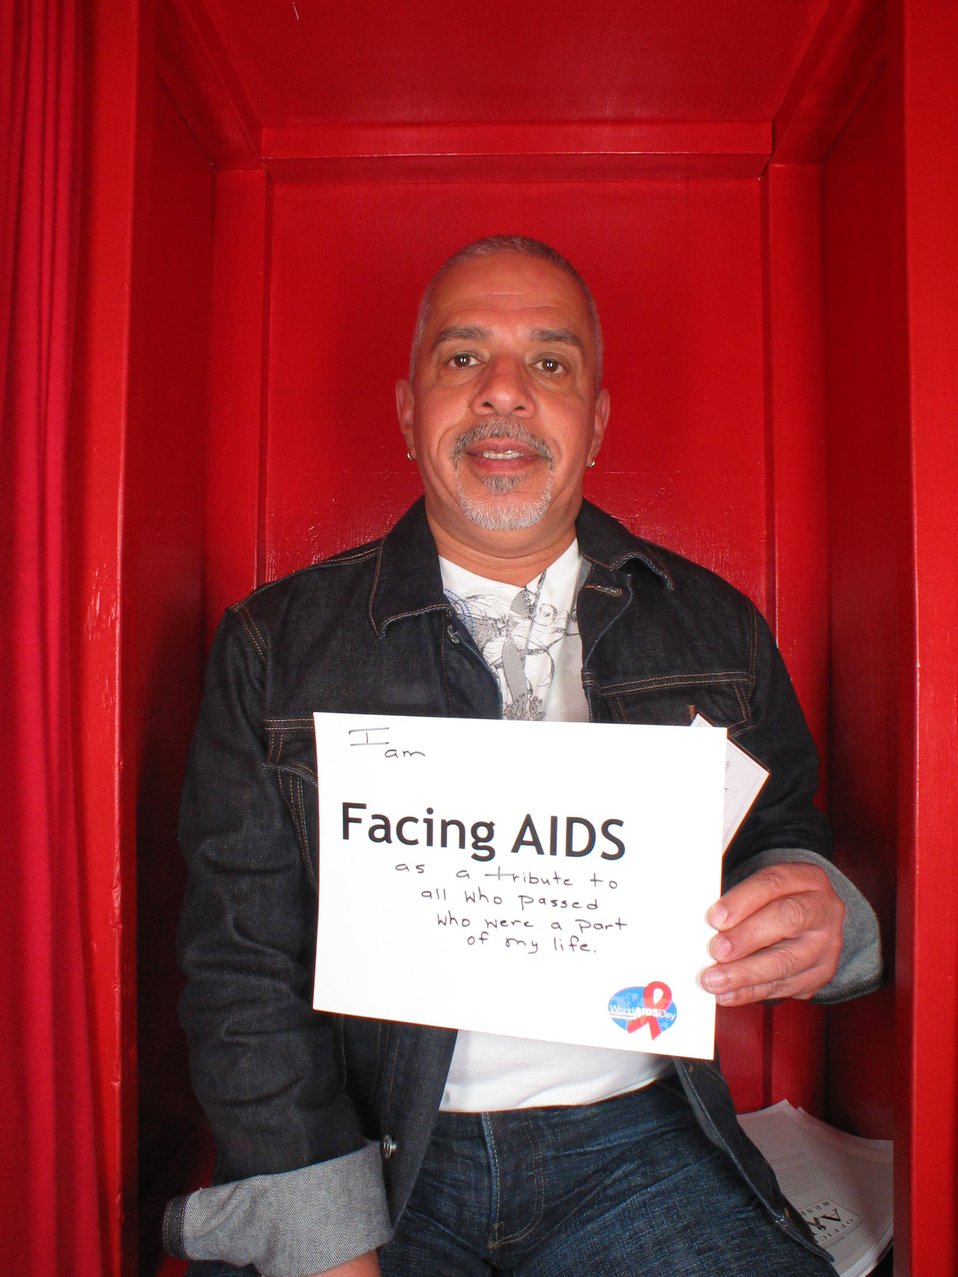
I am Facing AIDS as a tribute to all who passed who were a part of my life.